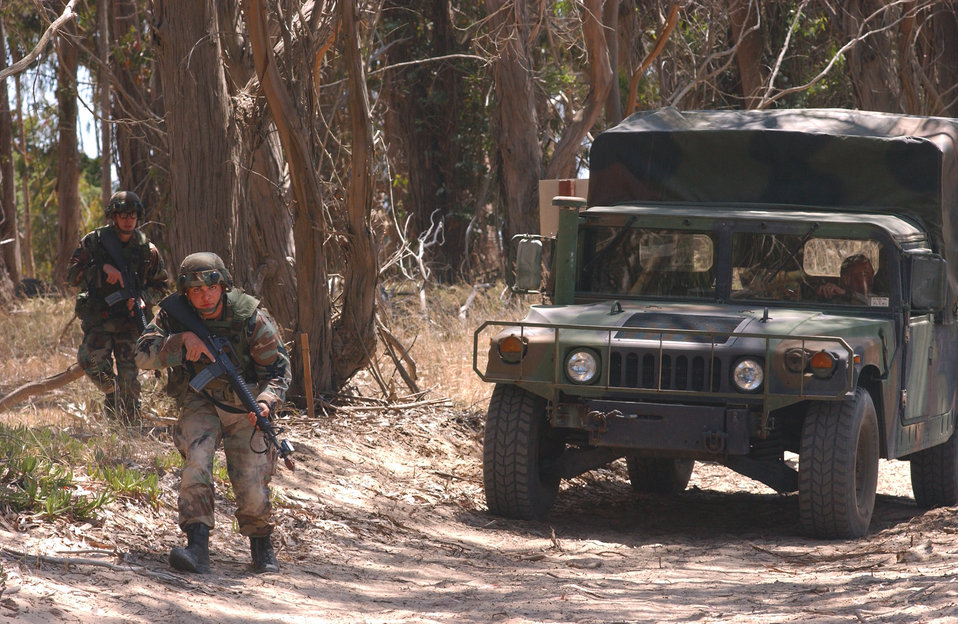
A game of hide and seek

VANDENBERG AIR FORCE BASE, Calif. -- Airman 1st Class Christopher Dickerson searches the area for aggressors during the security forces tactics competition for Guardian Challenge here May 4. Guardian Challenge, the world's premier space and missile competition, is a four-day event held annually. It tests the wartime readiness of Air Force Space Command's Airmen in spacelift, ICBM operations, communications, maintenance, helicopter operations, security forces and chef food preparation. Airman Dickerson is assigned to the 460th Air Base Wing, Buckley Air Force Base, Colo.